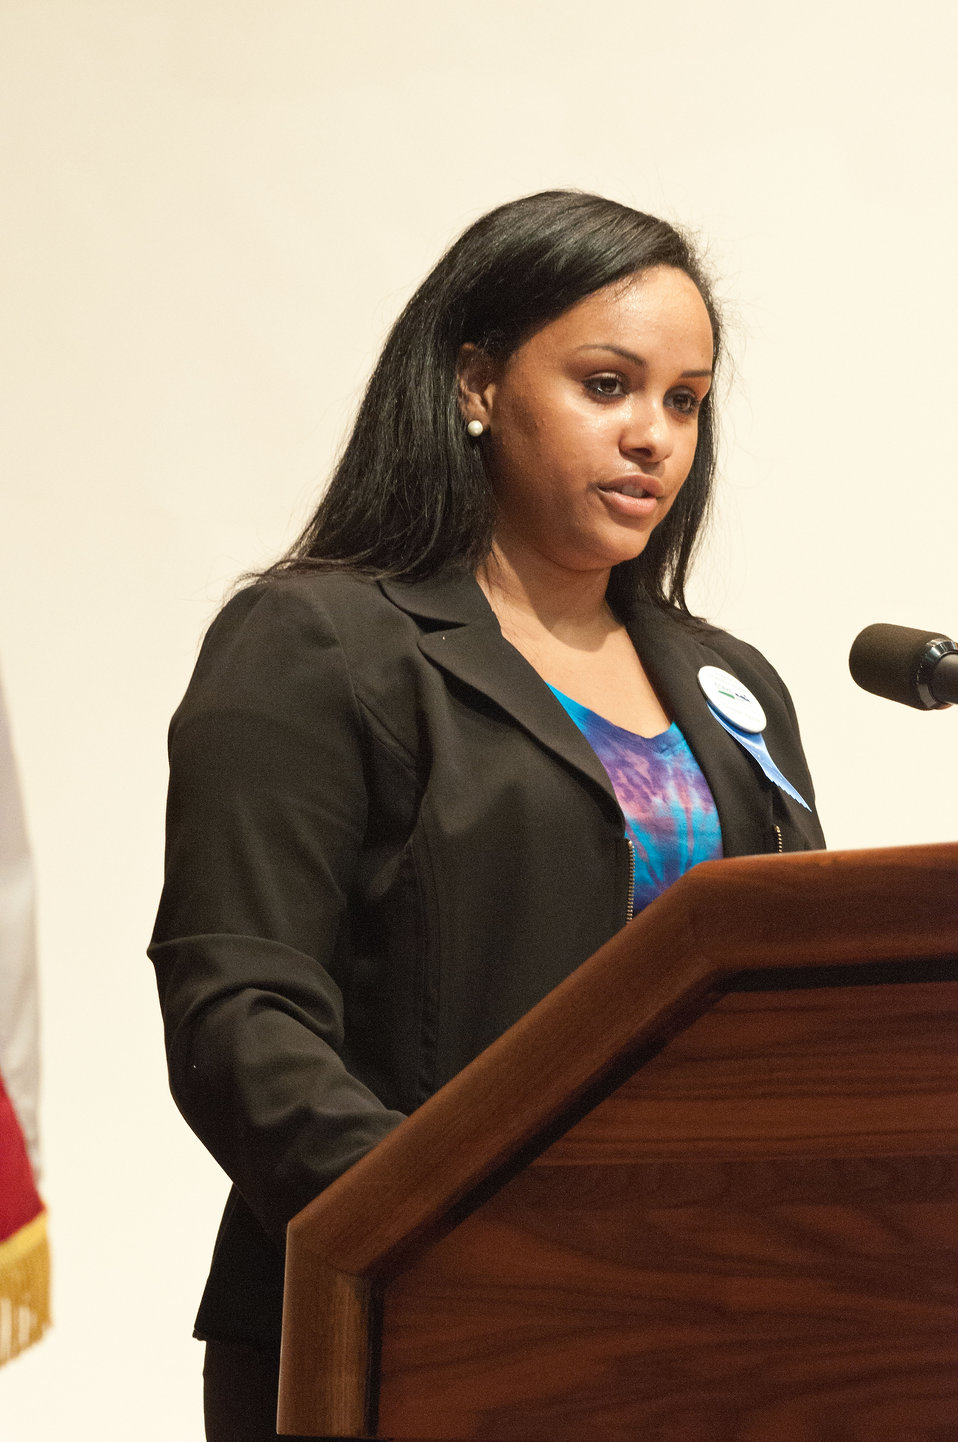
Christopher Newport University, Newport News, VA intern Winta Tewolde introduces Agriculture Under Secretary for Rural Development (RD) Dallas Tonsager during the Rural Development Cultural Transformation Day in Washington, D.C. on Thursday, July 12, 2012.